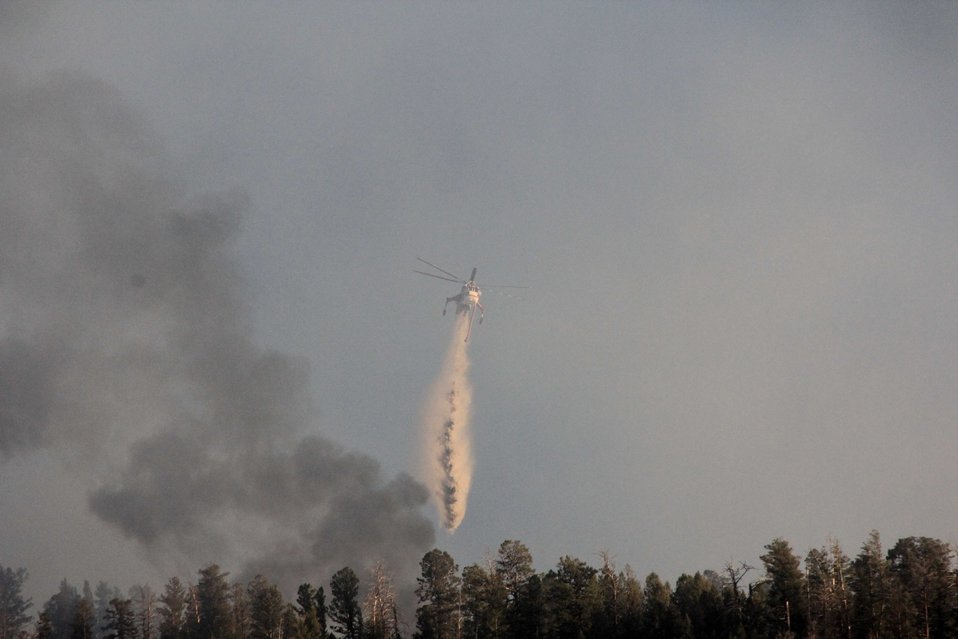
Water Drop

Helicopters were used to drop both water and retardant on the fire.

This photo was taken from the refuge administrative office complex, showing the proximity of the fire to the refuge headquarters.

Credit: USFWS / Tony Hough, National Elk Refuge volunteer